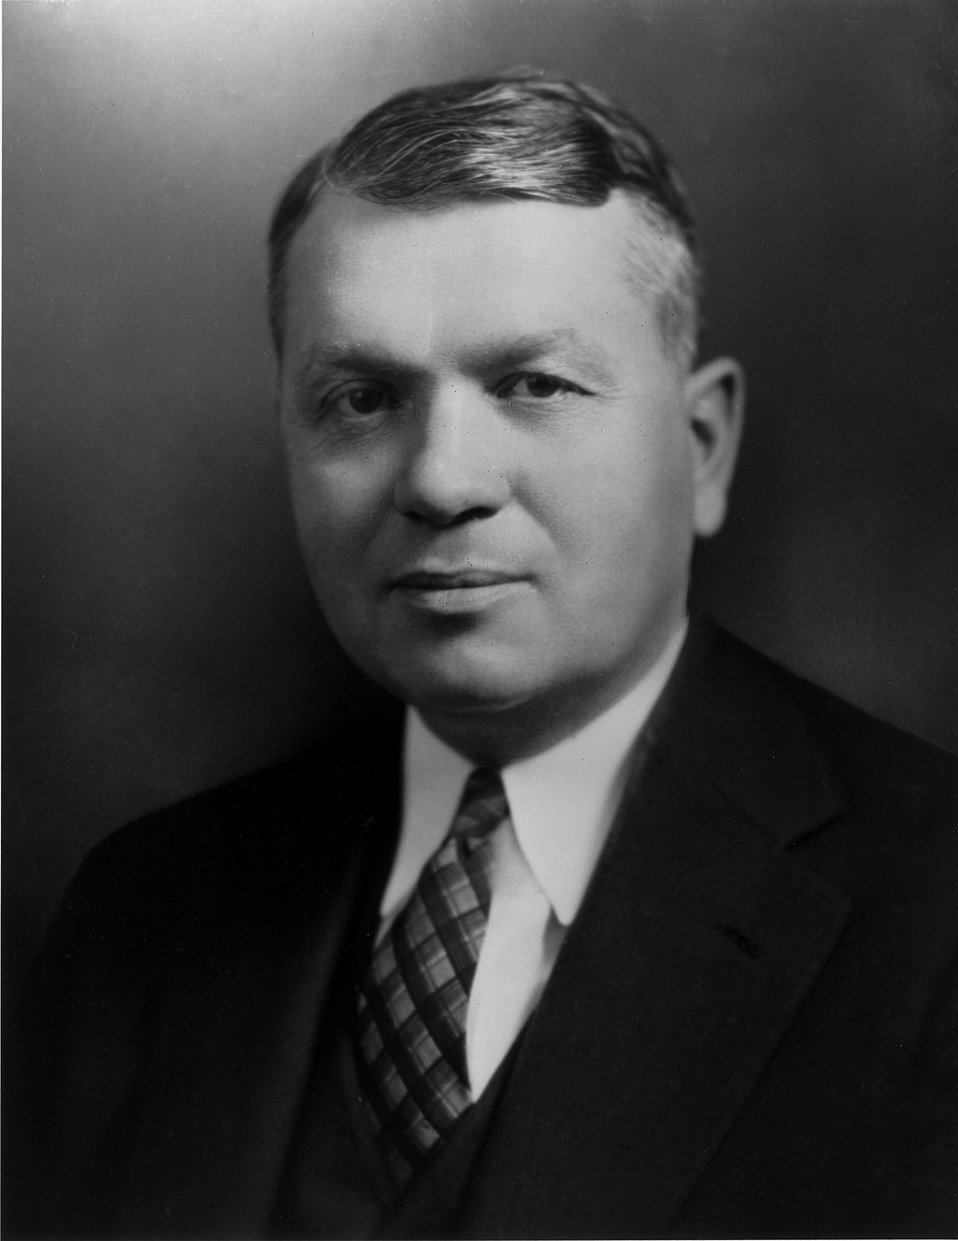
Harold Urey, Nobel Prize for Chemistry, 1934.